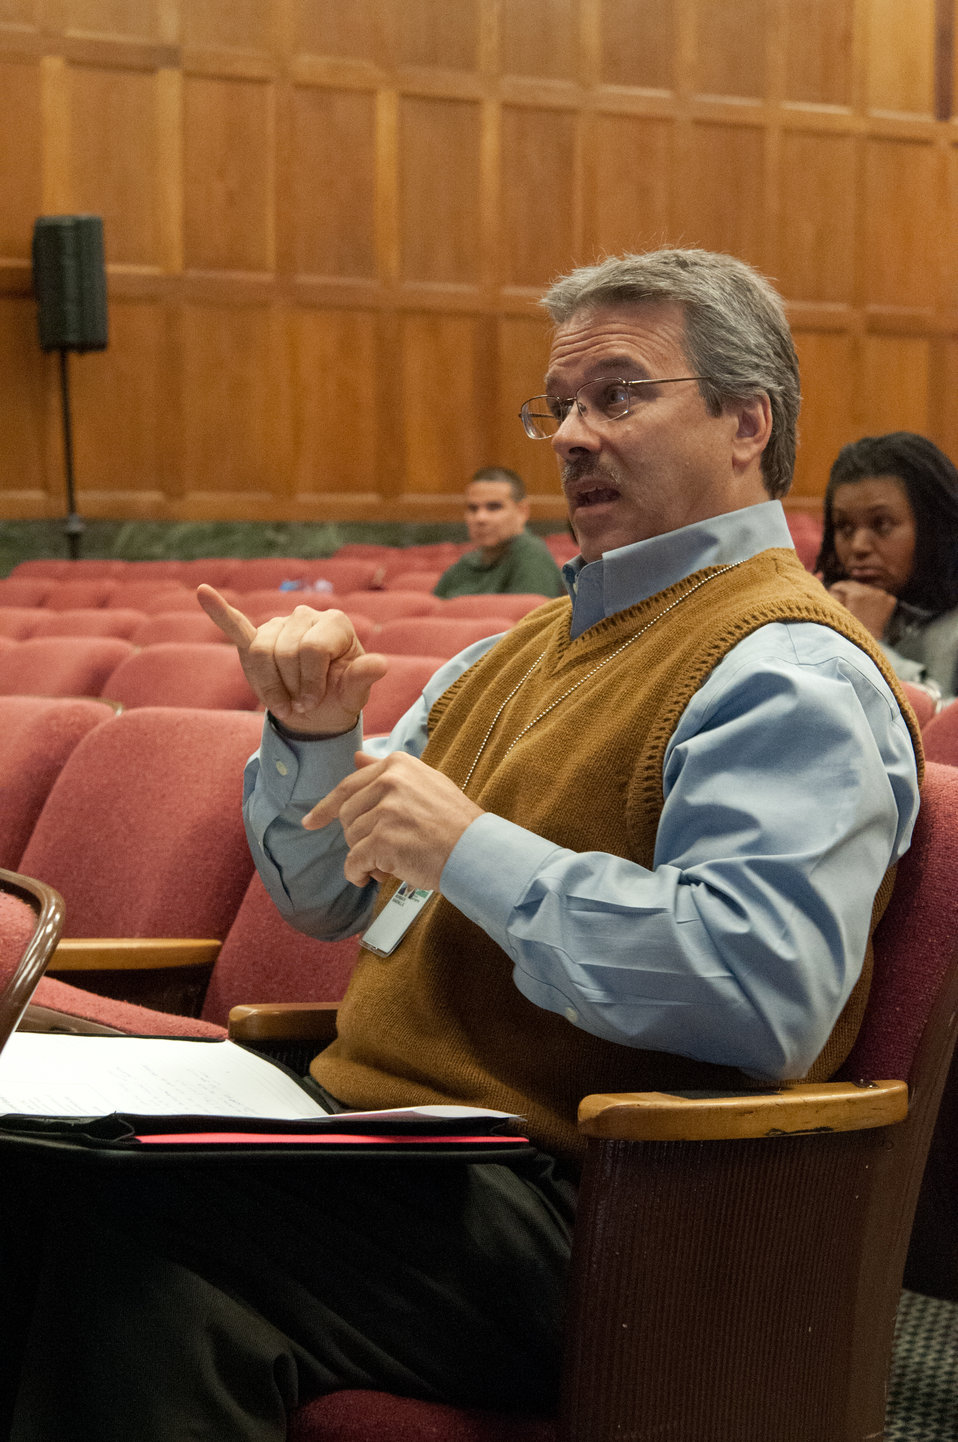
U.S. Forest Service Disability Program Manager Randy Murbach, asks questions and offers an opinion to speakers at the U.S.s Department of Agriculture (USDA) Office of Human Resources Management (OHRM) Disability Employment Program Team Training at USDA in Washington, D.C. on Tuesday, May 14, 2013.